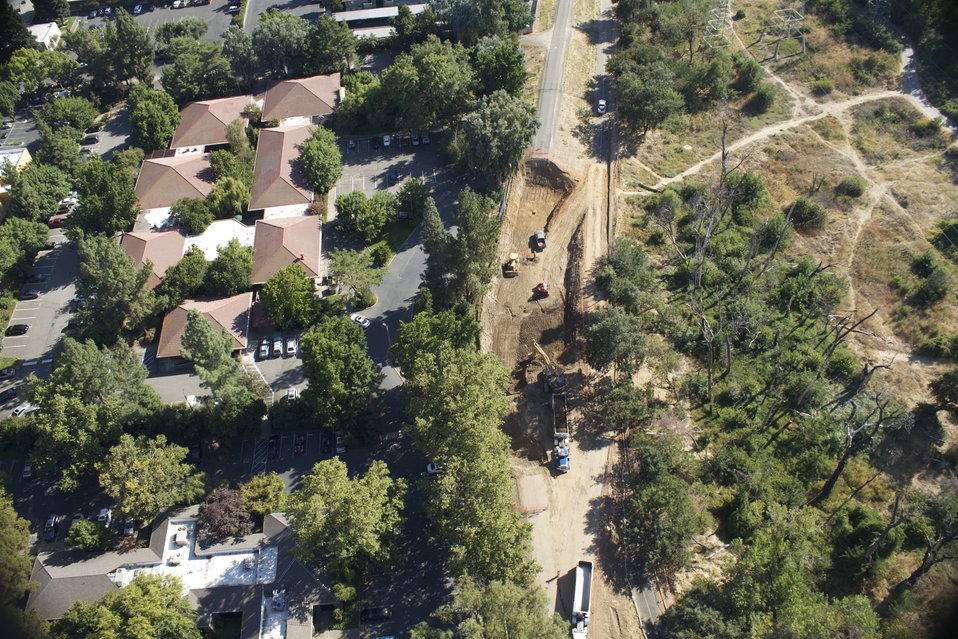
American River levee improvement construction

Construction continues on an American River levee improvement project in Sacramento, Calif., Sept. 8, 2011. Under the American River Common Features project, funded in part by the American Recovery and Reinvestment Act of 2009, the U.S. Army Corps of Engineers Sacramento District is installing a slurry wall in the levee to help strengthen it and make it harder for water to leak through.